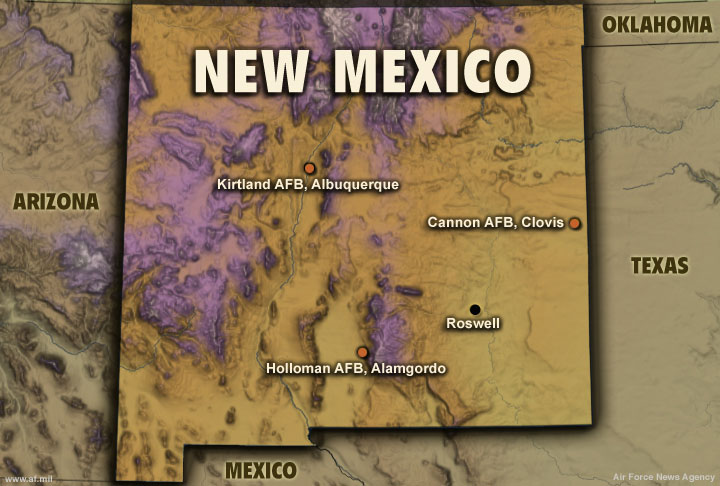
Map of New Mexico; location of Cannon Air Force Base, Clovis, N.M.